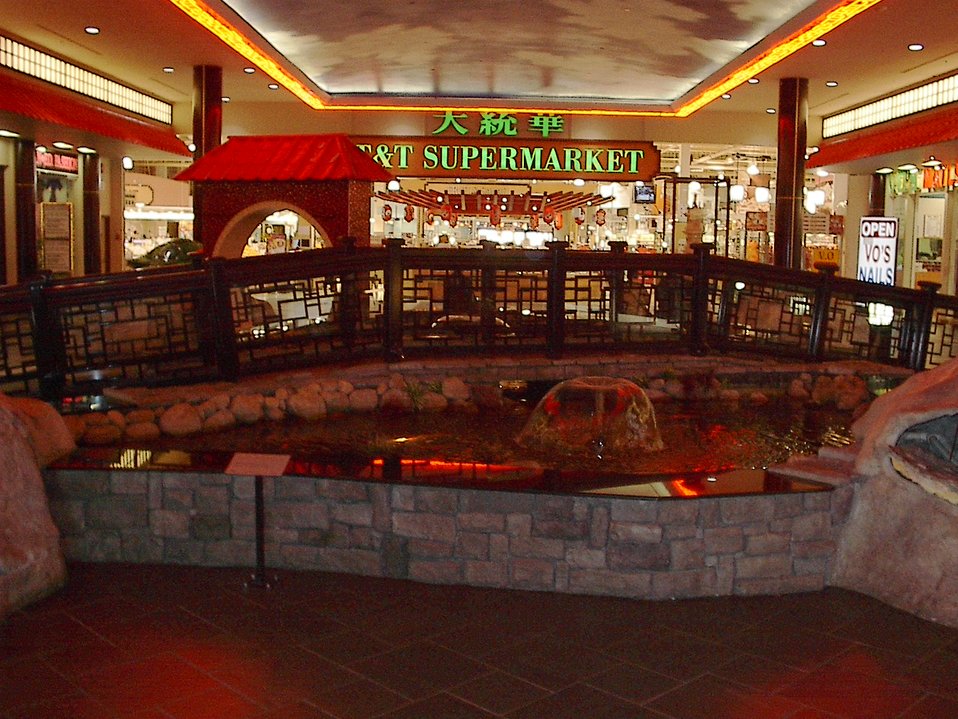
Author: Matteso Snapped the photo myself while at the mall